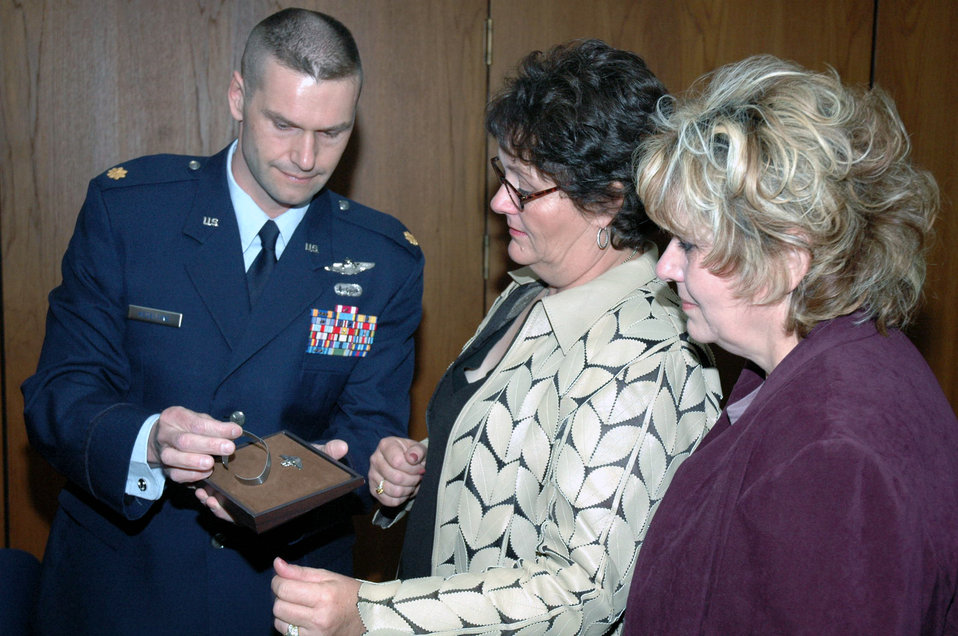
POW/MIA bracelet presented to family

Maj. Phil Heseltine shows the prisoner of war/missing in action bracelet he wore for 18 years bearing the name of Maj. Robert F. Woods to the daughters of Major Woods during the funeral for Major Woods April 9 at Arlington National Cemetery in Virginia. Major Heseltine is the executive officer for the Air Force Expeditionary Center commander at Fort Dix, N.J.